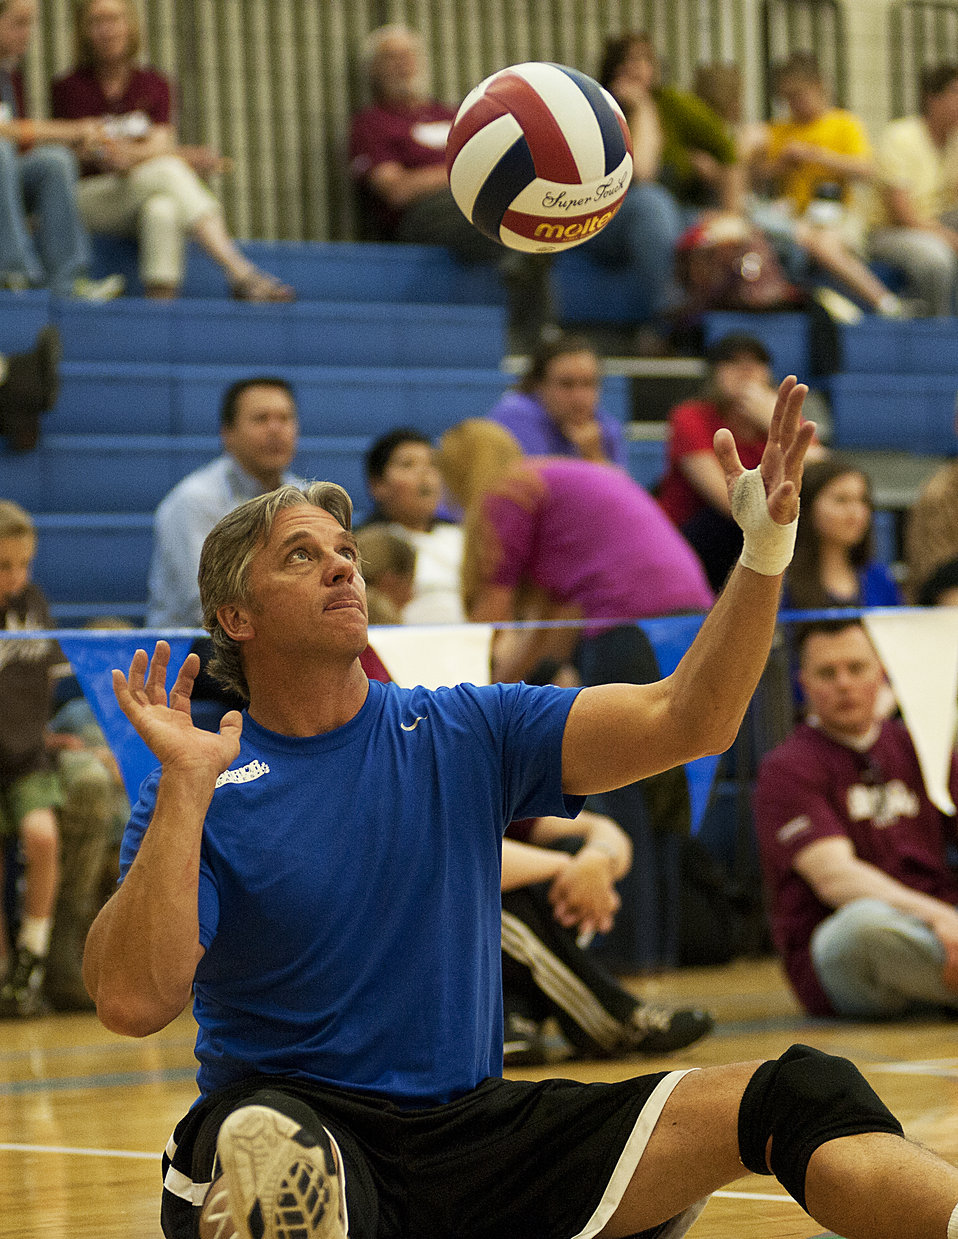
Warrior Games

Ken Gestring, with the Air Force team, serves the ball during his team's sitting volleyball bronze medal game against the Special Operations Command team during the 2012 Warrior Games at the U.S. Air Force Academy in Colorado Springs, Colo., May 3, 2012. Air Force won 25-12 and 25-20.